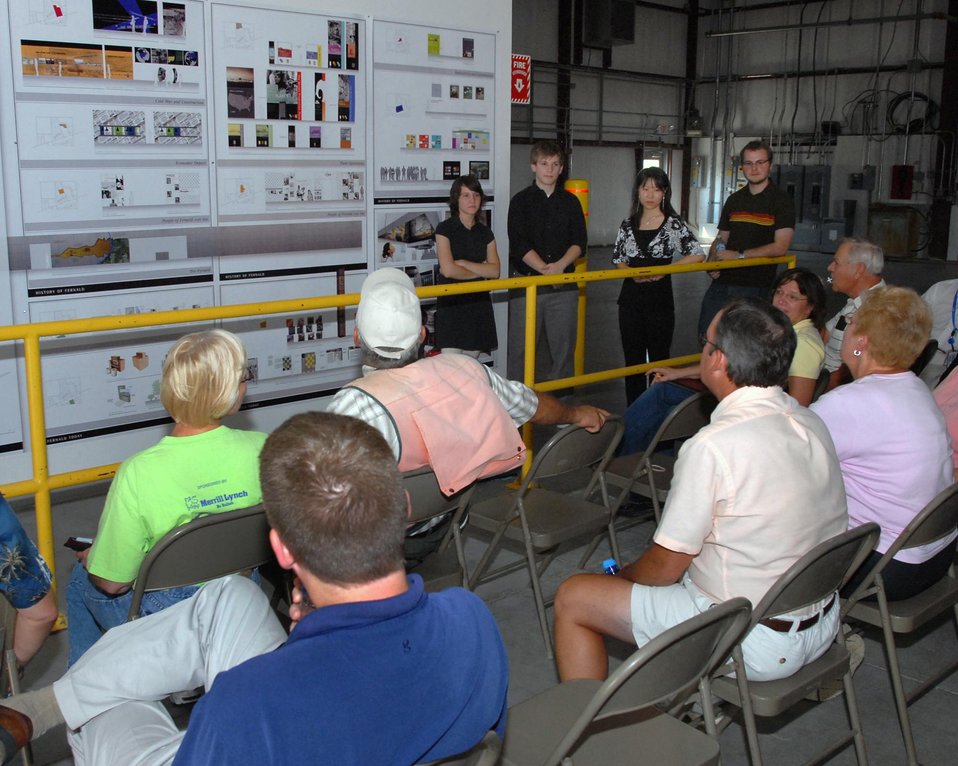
Plans to convert a remediation-era warehouse into the Fernald Preserve Visitors Center were discussed with local citizens at community meeting and other venues to ensure that the public's needs were met.